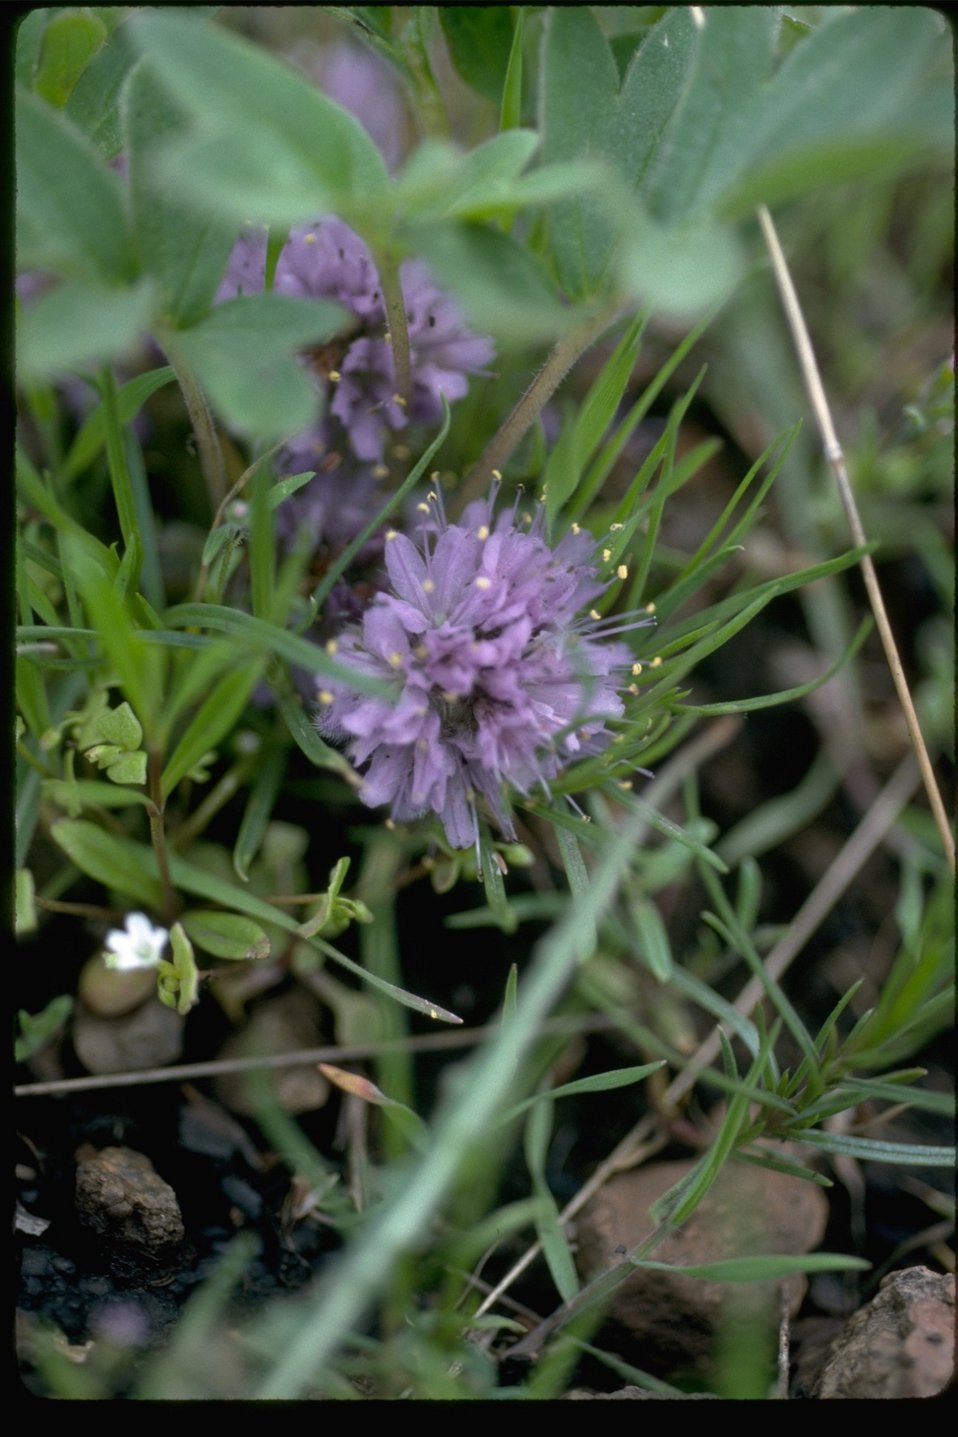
Dwarf Waterleaf (Hydrophyllum Capitatum) found in the Juniper/Pine zone near Burns, Oregon.